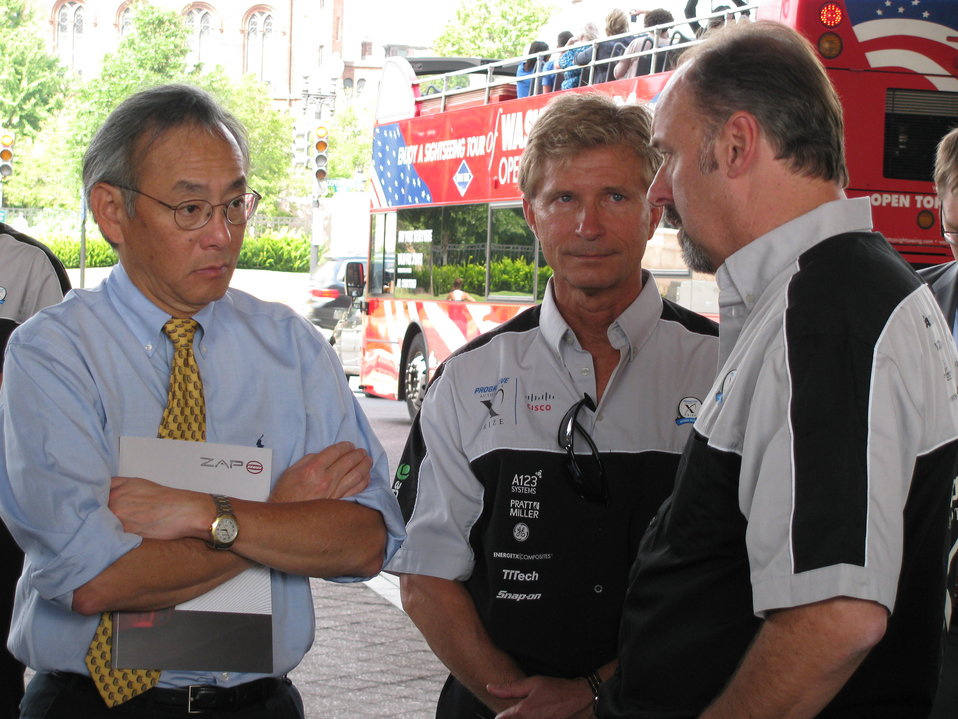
X Prize 052